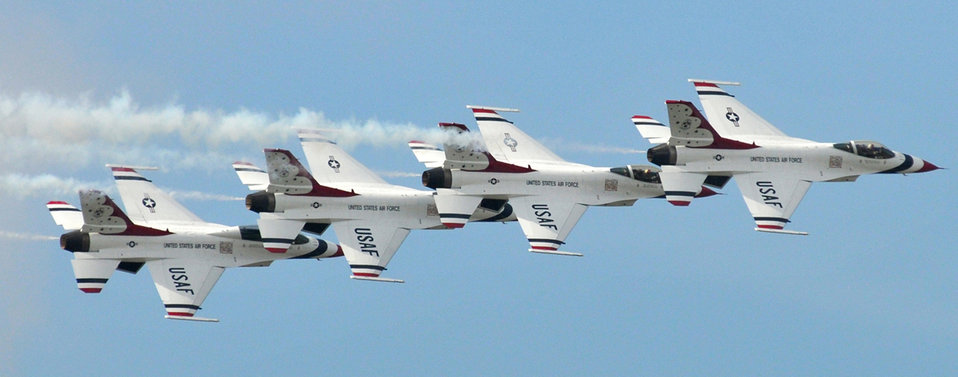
Follow the leader

The Air Force Thunderbirds dazzled visitors at the Thunder in the Bay air show April 4 by flying in close formation over Keesler Air Force Base, Miss. The two-day air show was the base's first air show in five years, and the crowd was estimated at more than 142,000.